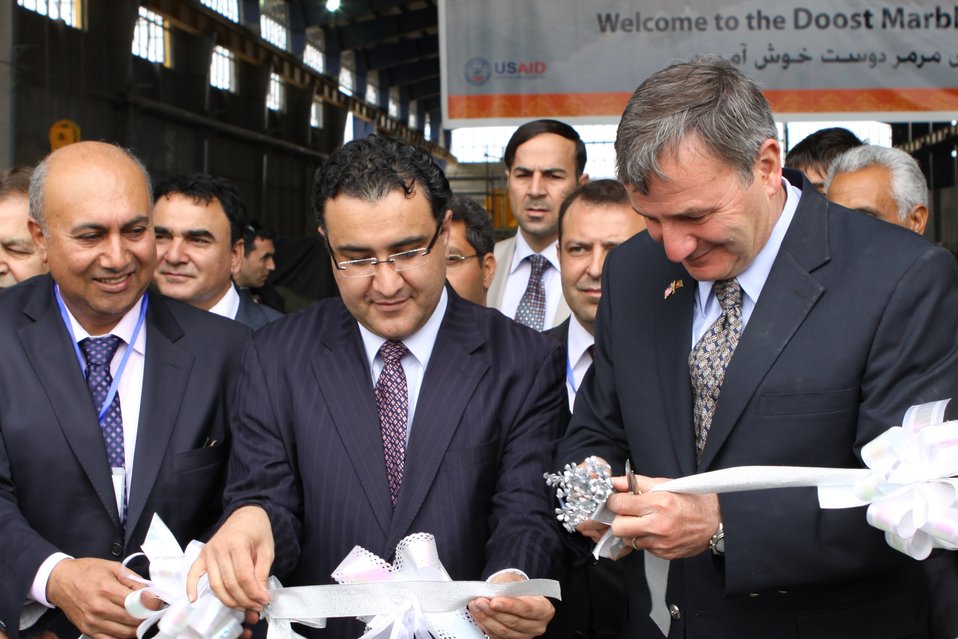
100525 Hirat Marble Conference 071